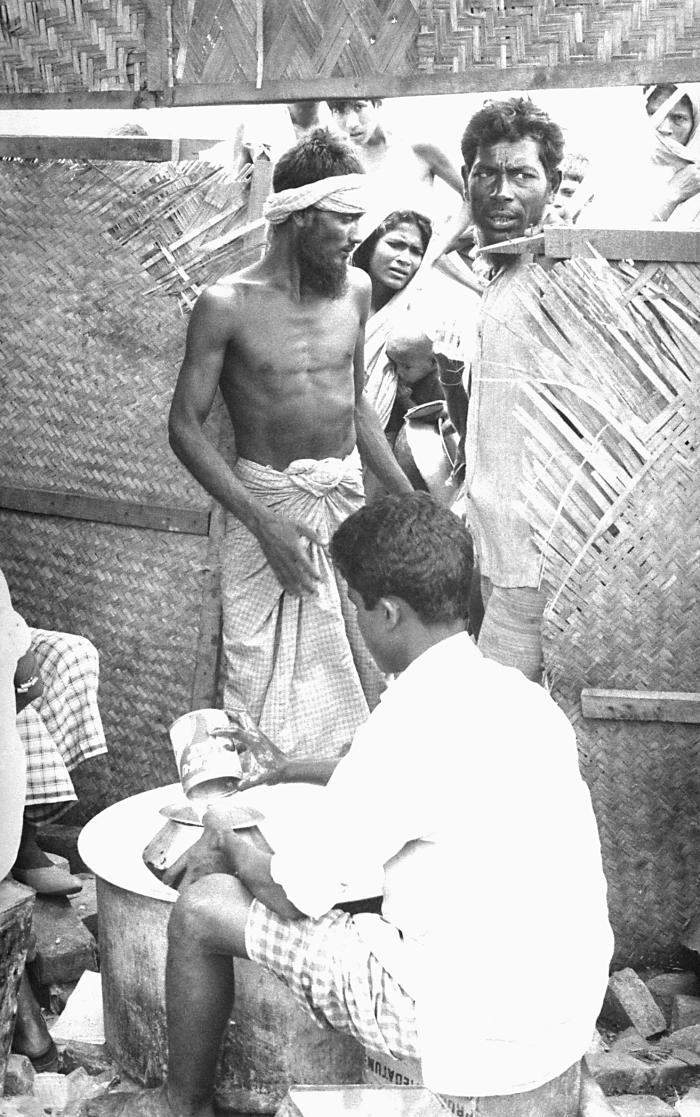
This photograph depicted a seated man as he was distributing rice to local Bangladeshi townsfolk during a time of famine. Though this image was taken in the 1970s, Bangladesh was, and still is one of the poorest countries in the world. This image was part of a series provided by Dr. Stan Foster, and captured by Pierre Claquin, M.D., B.A.C., who at the time was a member of the World Health Organization's Smallpox Eradication Program. It was part of a series photographed by former E.I.S. officer, Stanley O. Foster M.D., M.P.H., and was one of a series entitled 'The Story of One Smallpox Jeep', which depicted the travails faced by the jeep, and its occupants of public health practitioners, as they road through the Bangladesh countryside in an attempt to eradicate smallpox from the country.